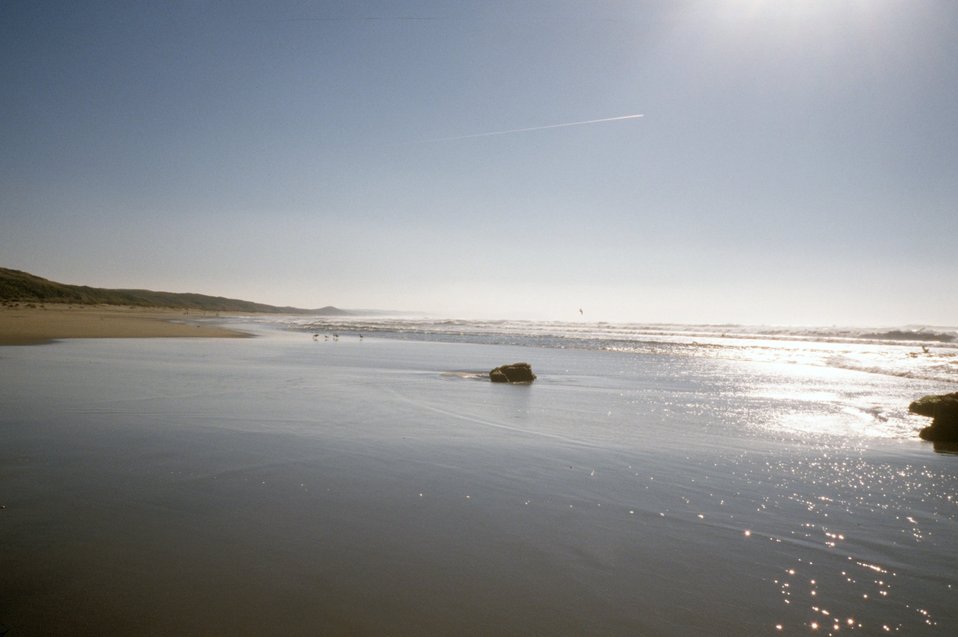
Point Reyes Great Beach. A lone aircraft streaks across an otherwise unblemished sky on a golden winter afternoon.